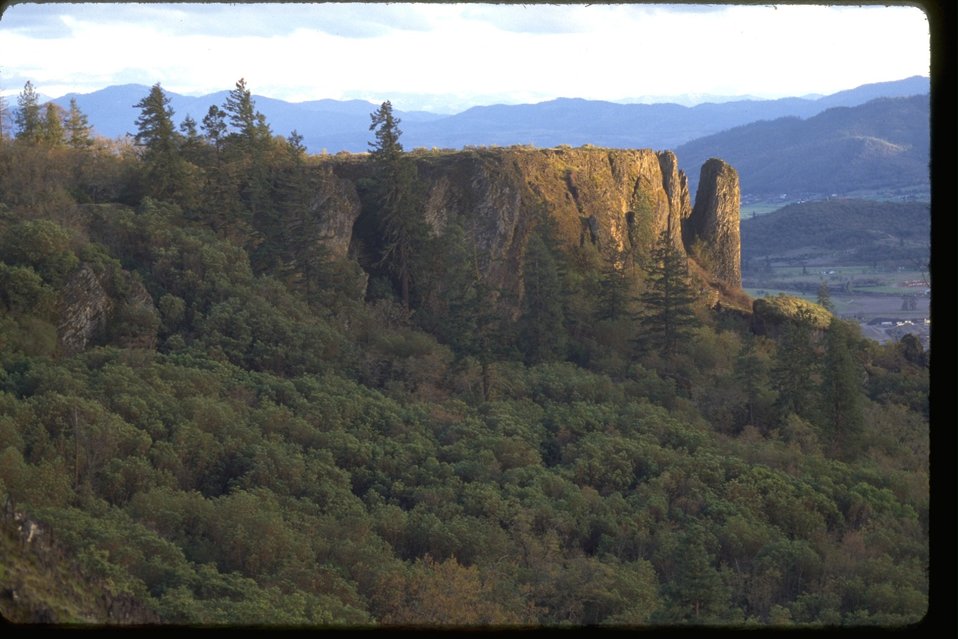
Lower Table Rock